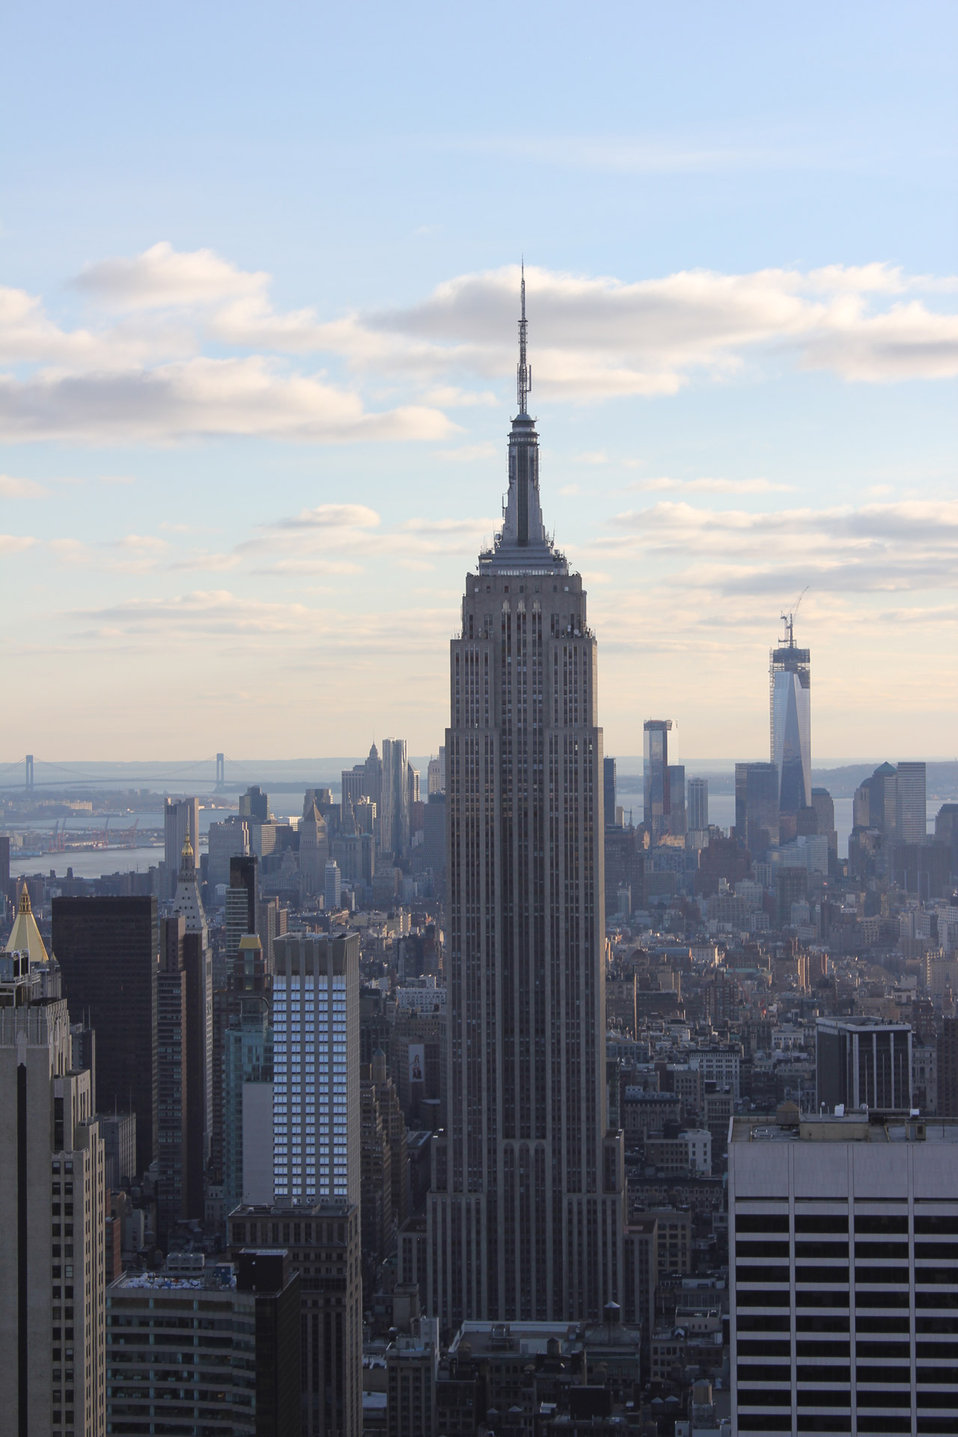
Empire state building

New york building.